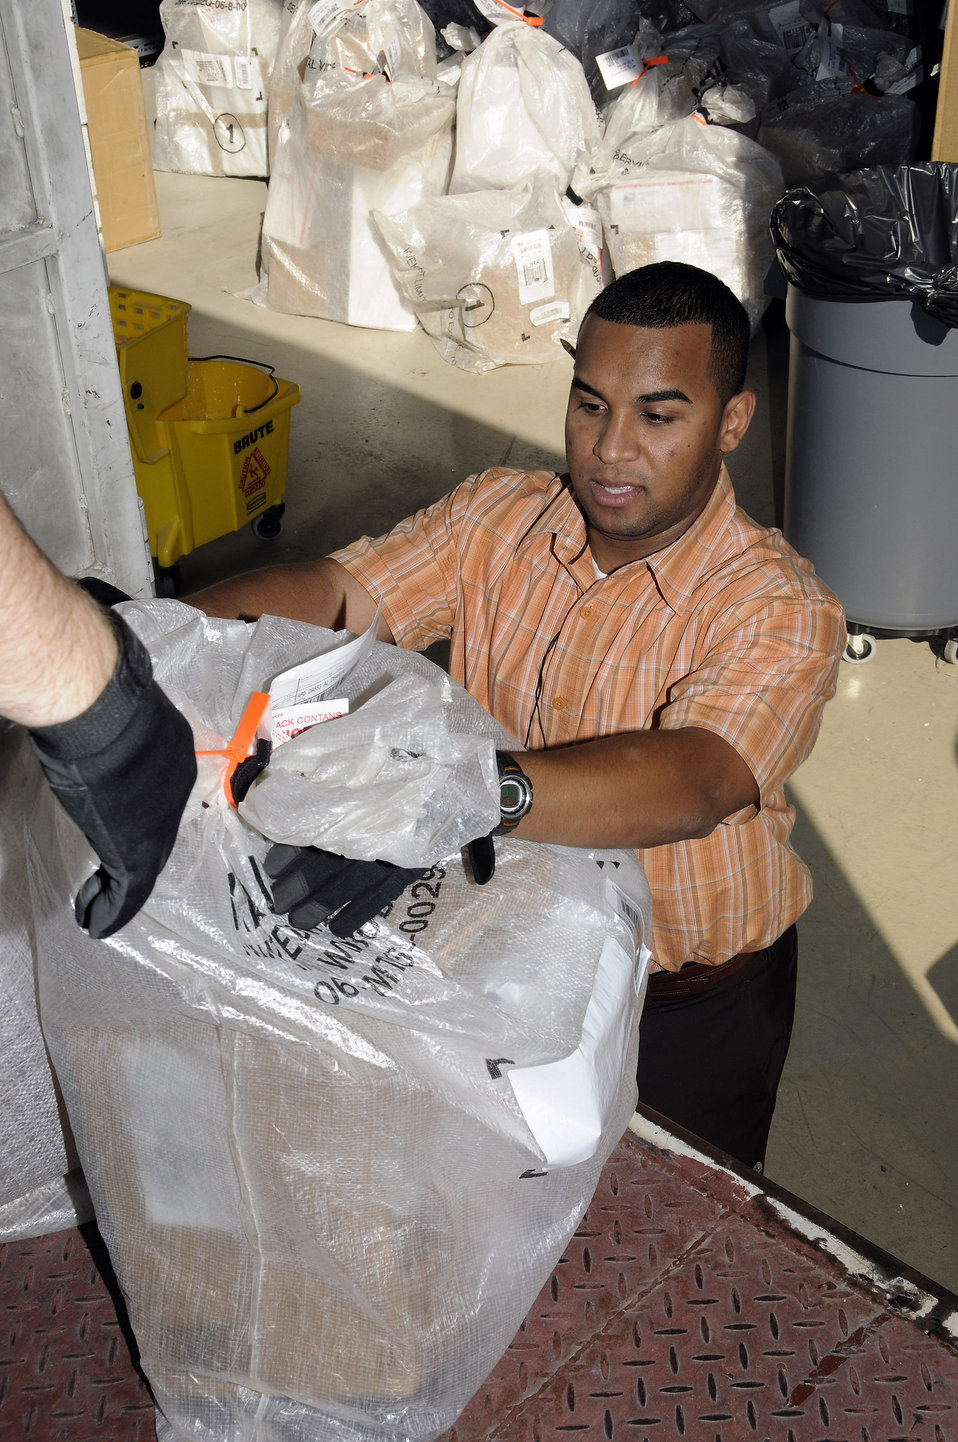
Letters, packages to Airmen increases during holiday season

Oneris Barett inspects packages delivered to the 380th Air Expeditionary Wing for damage Dec. 8 at an air base in Southwest Asia. Mr. Oneris works for Alutiiq International Solutions LCC. This company is contracted to provide personnel and services for the 380th Air Expeditionary Wing Post Office. Mr. Oneris is from the Bronx, N.Y.